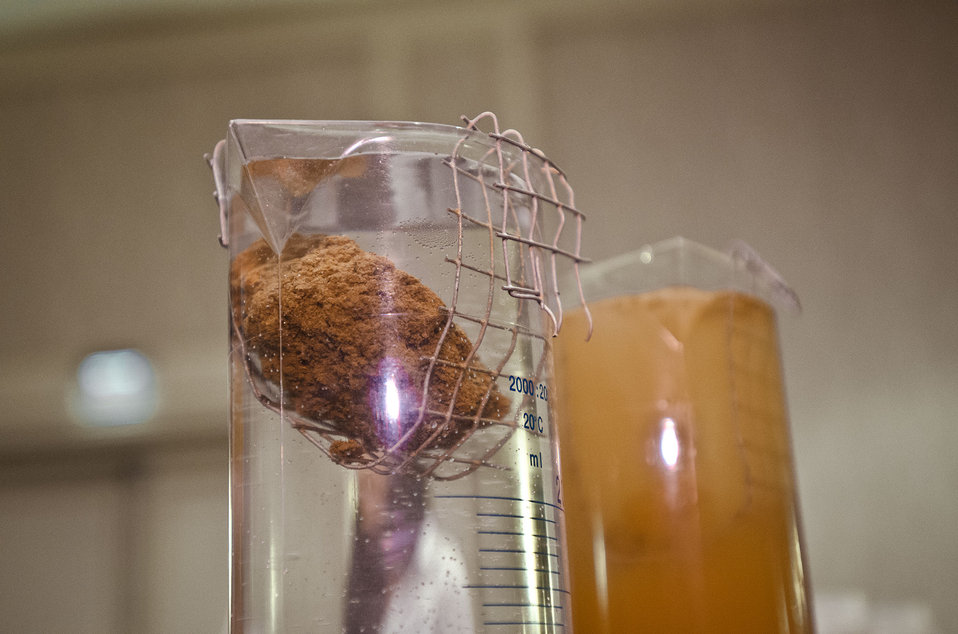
The U.S. Department of Agriculture (USDA) Natural Resources Conservation Service National Soil Health and Sustainability Team Agronomist Ray Archuleta demonstrate the usually unseen and misunderstood differences between healthy un-tilled soil (left) and how soils can become unhealthy, during the 2013 Agricultural Outlook Forum held at the Crystal Gateway Marriott Hotel in Arlington, VA on Friday, Feb. 22, 2013. One of Mr. Archuleta's demonstrations, he shows the left container with a ball of healthy untilled soil, which holds its structure, while the tilled soil ball, of the same size, quickly lost it's integrity and mixed with the water. Mr, Archuleta is a champion for understanding soil health as the foundation for farming sustainably in the 21st century: reducing chemical inputs; creating sustainable farming; improving water holding capacity; improving the farmer’s bottom line; and feeding an increasing global population. The breakout session on Reducing Risks by Improving Soil Health examined the indicators of soil health, to reduce chemical inputs and apply the right techniques for sustainable production and other benefits. Soil health is defined as the capacity of the soil to function as a living ecosystem that sustains plant, animal, and human health with limited human intervention.